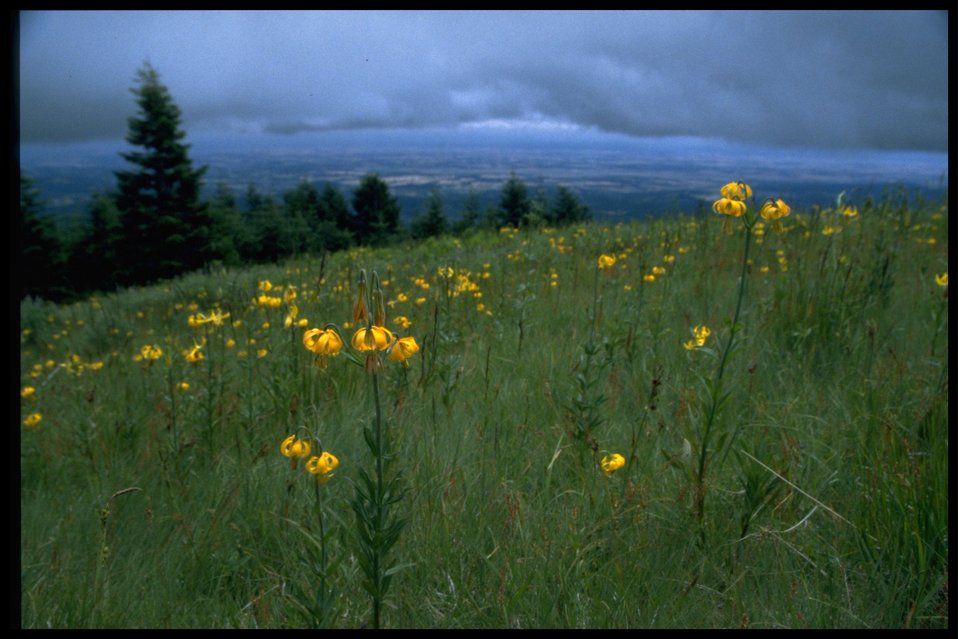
Wide shot of Tiger Lilys, Lilium columbianum.